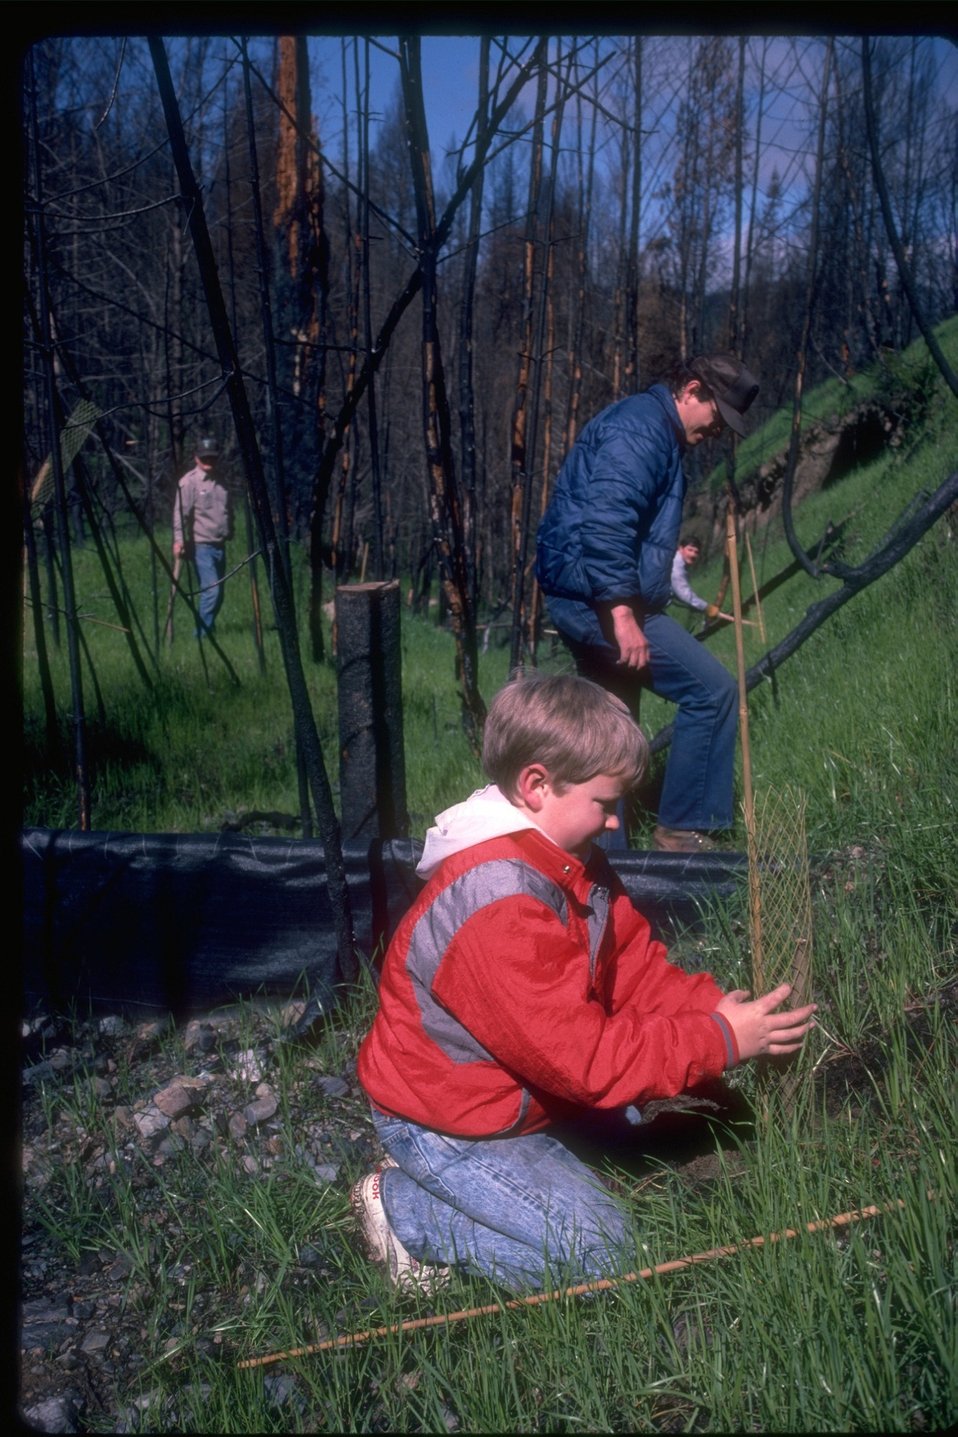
Cub Scouts are volunteering by planting trees.